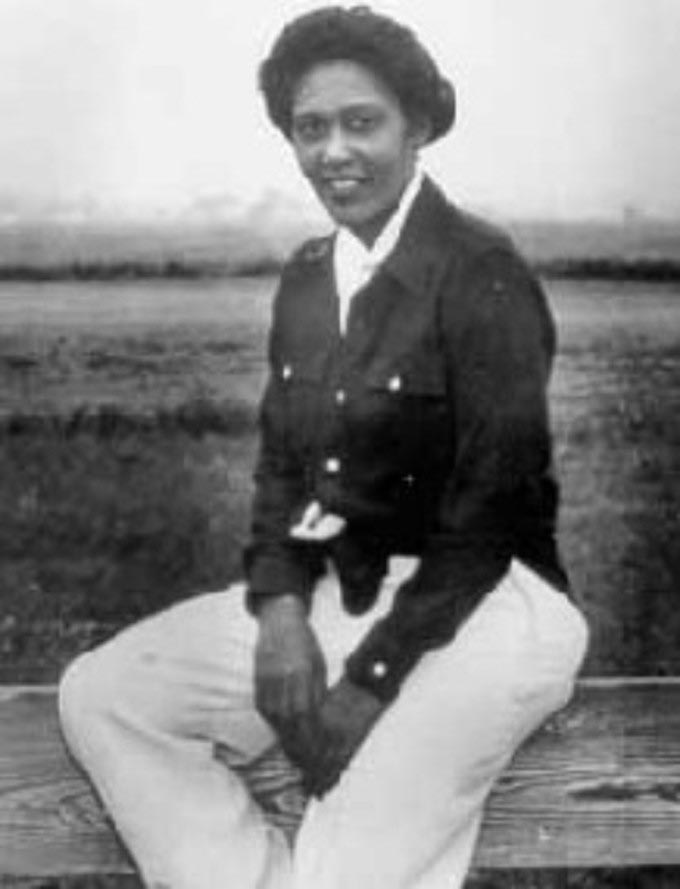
Janet Bragg: First African-American woman to earn commercial pilot's license.